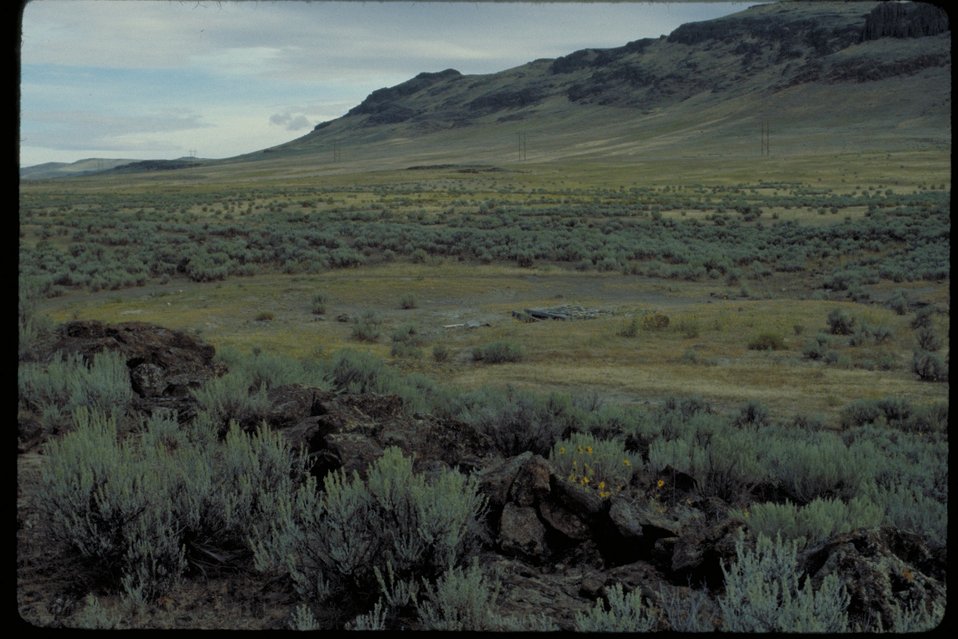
Oregon Trail Hot Springs Lower Snake River District